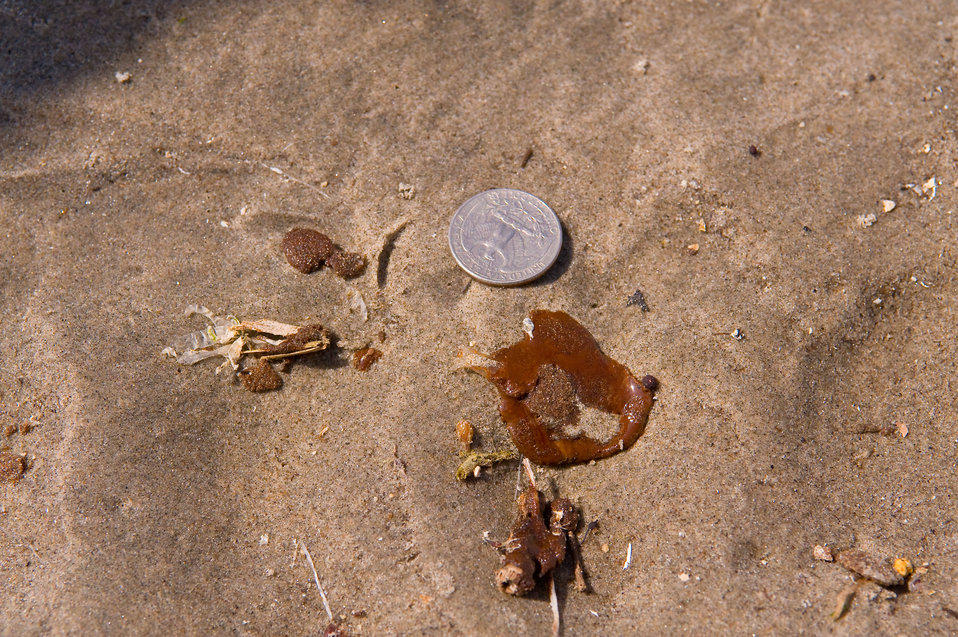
May 14, Small globs of weathered oil on Lafourche Beach, La.

Globs of oil can result from wind and wave action churning up raw crude oil when it hits water.